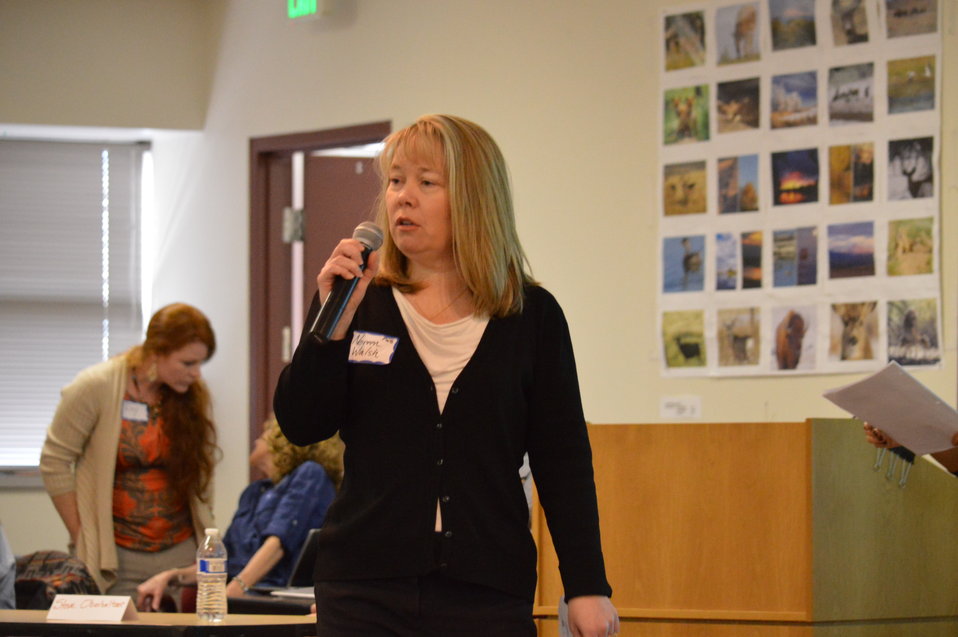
Eagle Summit III

Noreen Walsh (Regional Director) welcomes attendees to the Eagle Summit III in Denver, Colorado on March 20, 2014 at the Rocky Mountain Arsenal National Wildlife Refuge.